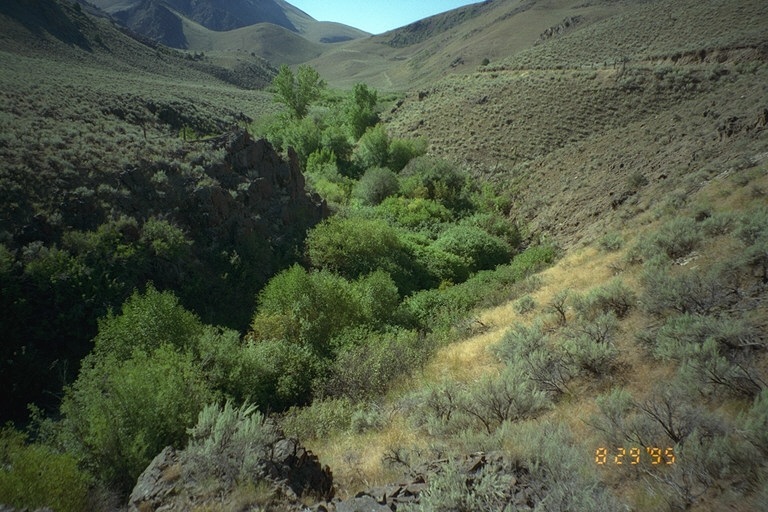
Riparian area Public Lands Salmon Field Office UCSC Upper Columbia Salmon Clearwater District